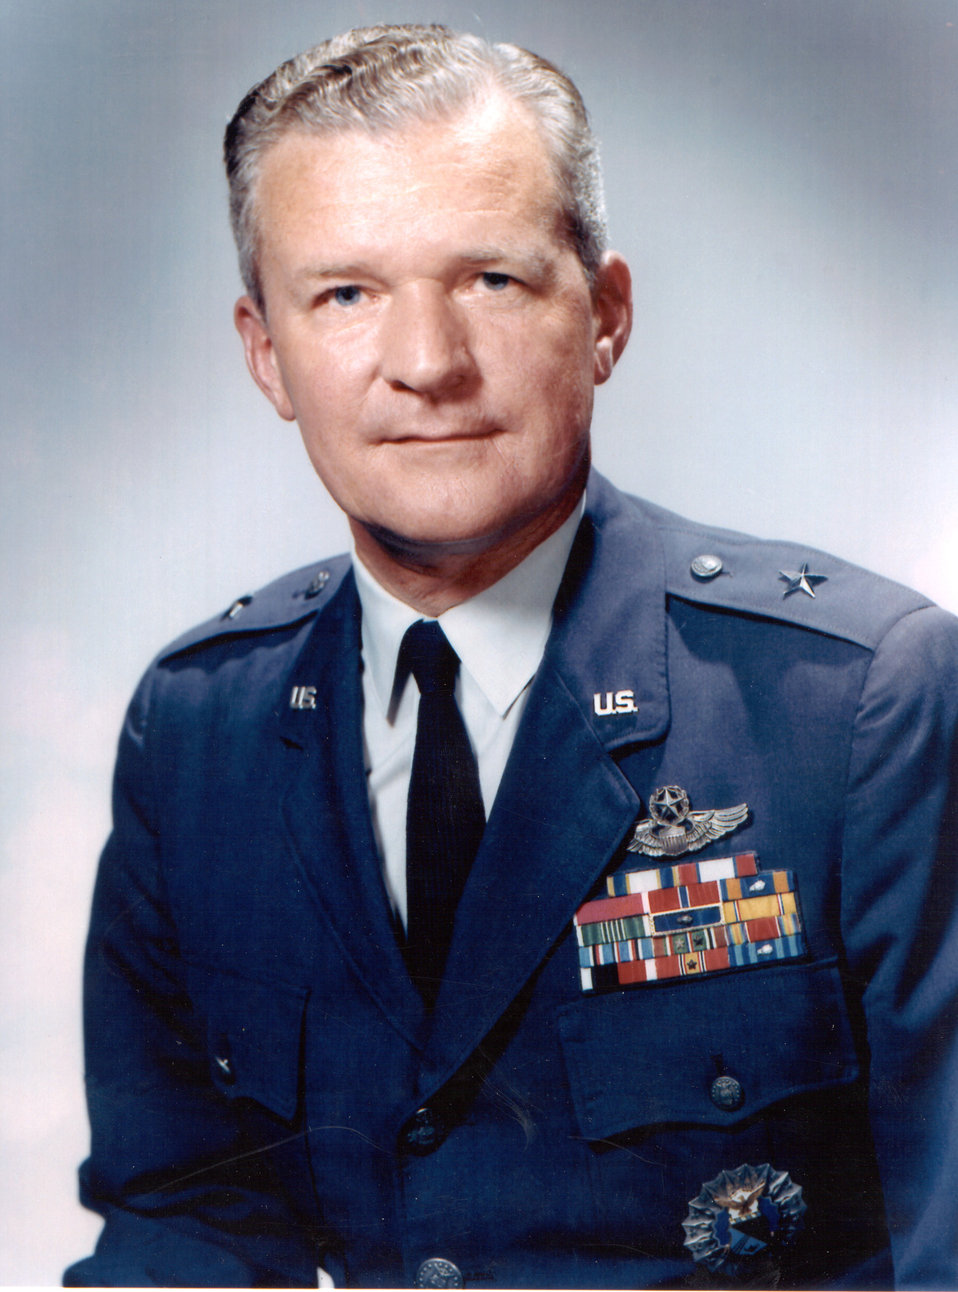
Air Force legend passes away at 86

Brig. Gen. Robert F. McDermott file photo, circa 1968.